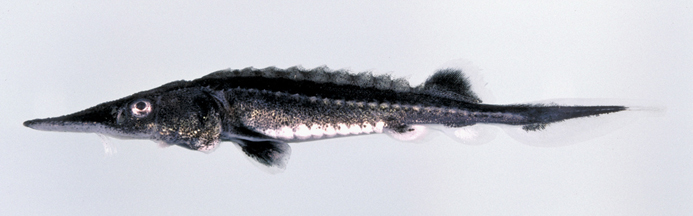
Shortnose sturgeon (Acipenser brevirostrum)

USFWS Headquarters
Status: Endangered